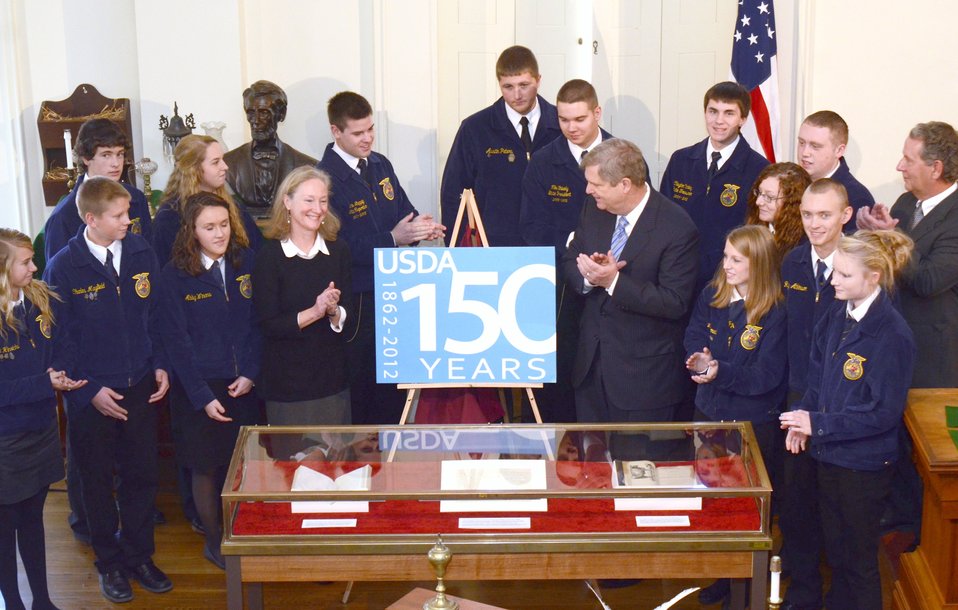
Agriculture Secretary Tom Vilsack (right) and Deputy Under Secretary for Marketing and Regulatory Programs (MRP) Ann Wright (left) unveiled the new graphic to commemorate the 150th Anniversary of U.S. Department of Agriculture in the hometown of its founder President Abraham Lincoln. The event took place at the Old State Capitol in Springfield, IL, on Wednesday, November 2, 2011.